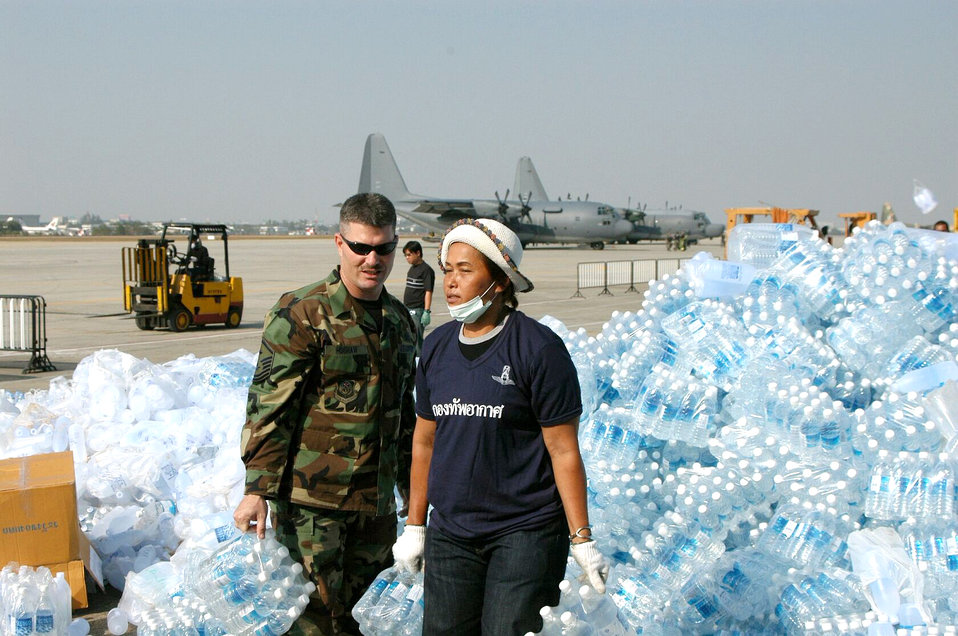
Airmen continue to deliver relief in Thailand

BANGKOK, Thailand -- An Airman here teams up with a Thai volunteer Jan. 1 to organize bottles of drinking water at the international airport. He and 100 others from the 353rd Special Operations Group are flying supplies to the tsunami-hit areas of southern Thailand. The 353rd SOG is assigned to Kadena Air Base, Japan.